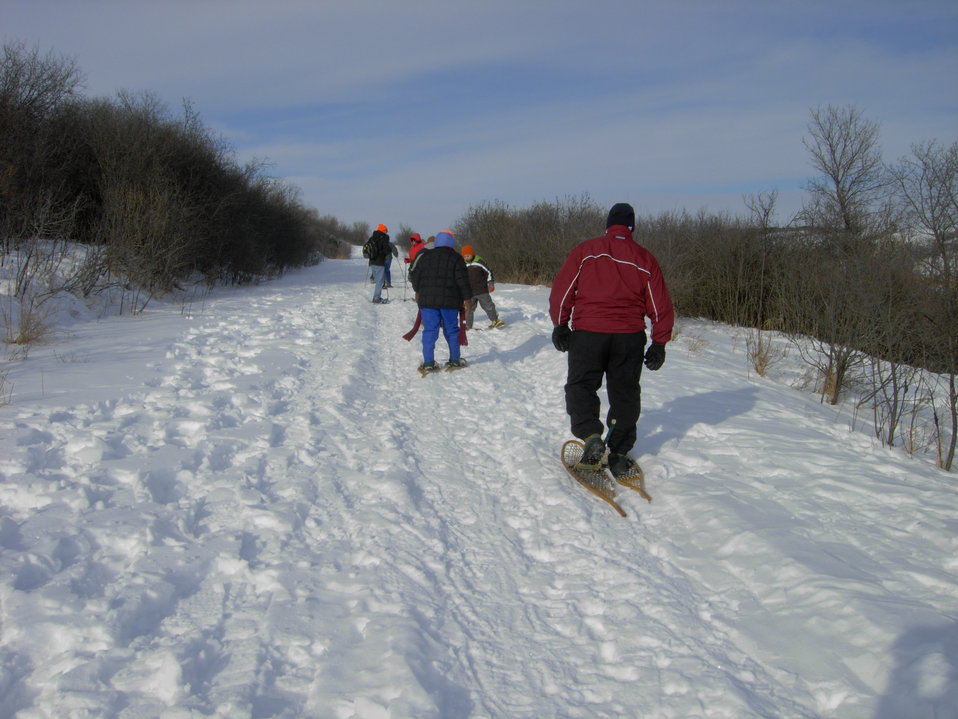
Group Snowshoeing

Getting the hang of their new 'scoots'!!